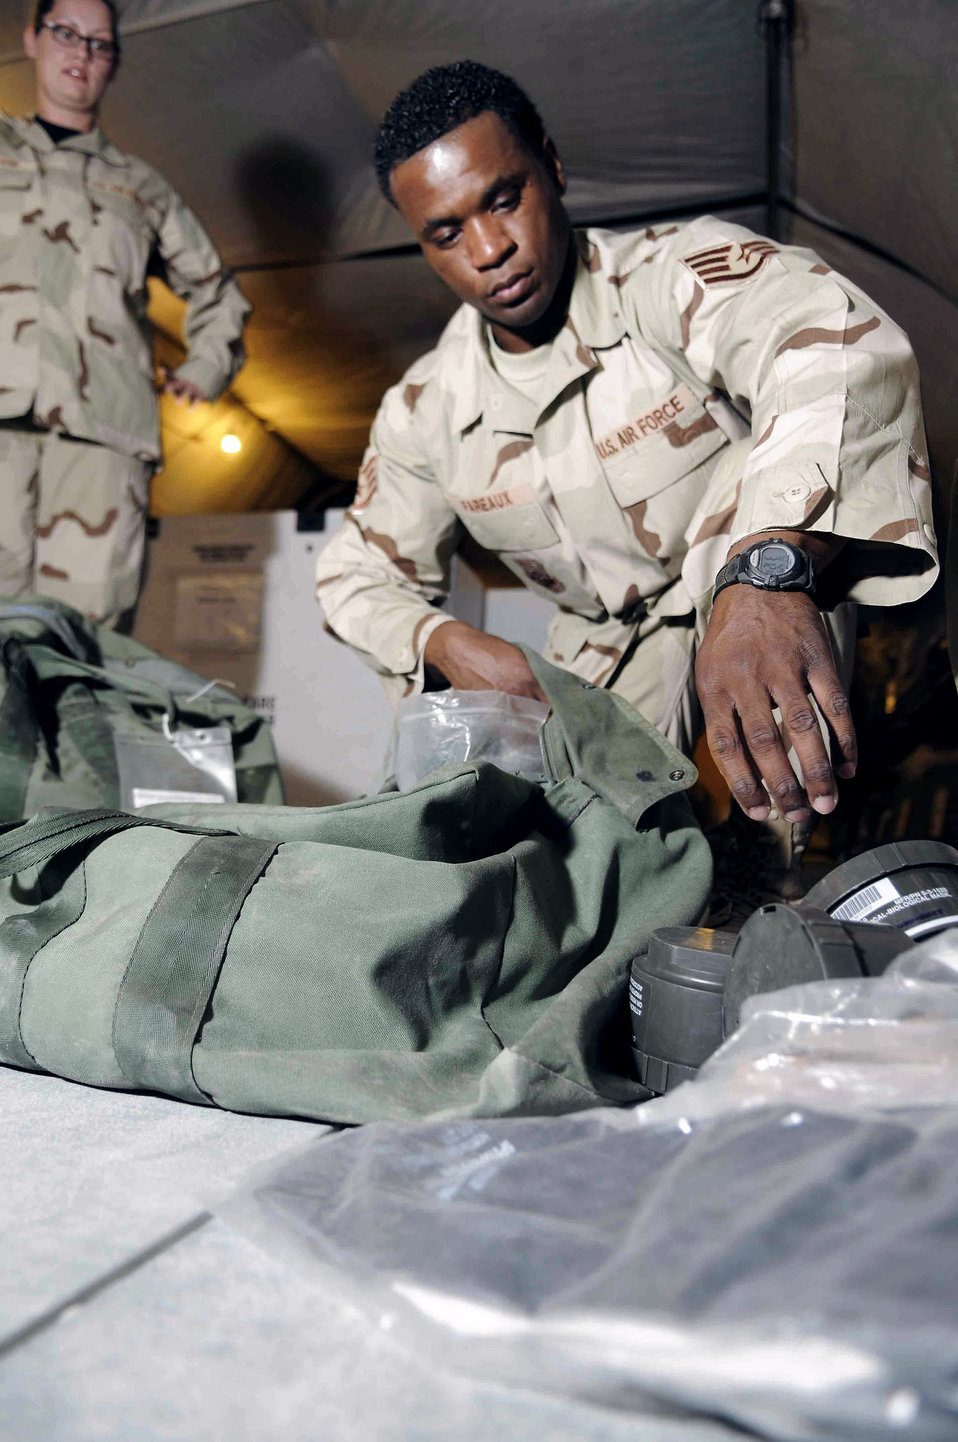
Distrution center saves lives, makes travel easier

Staff Sgt. Julio Fareaux inspects a bag to ensure every item is present and not past its expiration date April 29 at a Southwest Asia air base. Sergeant Fareaux, assigned to the 379th Expeditionary Logistics Readiness Squadron, and his team help up to 150 customers an hour returning from the area of responsibility.